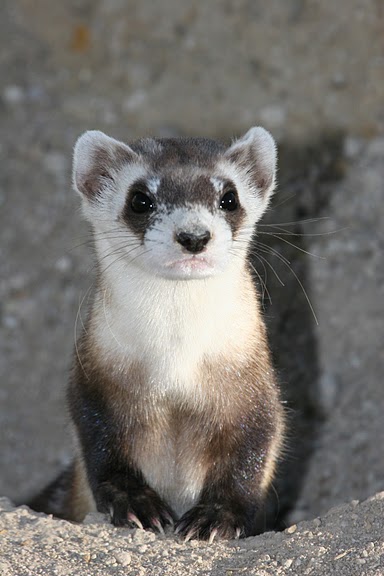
Black-footed Ferret